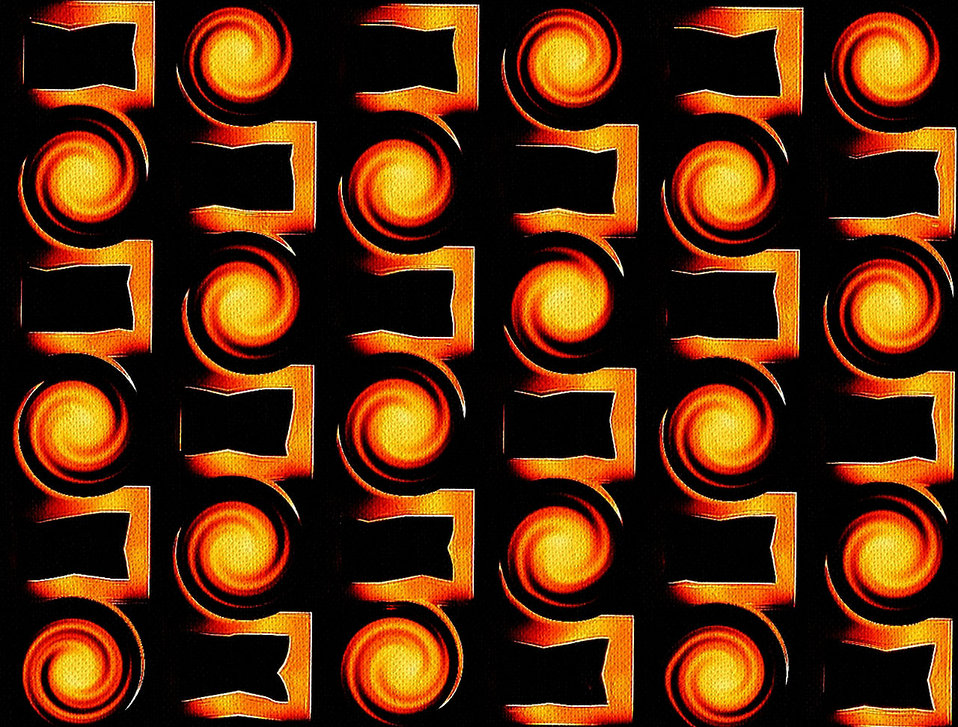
Change

Nothing is as it was.